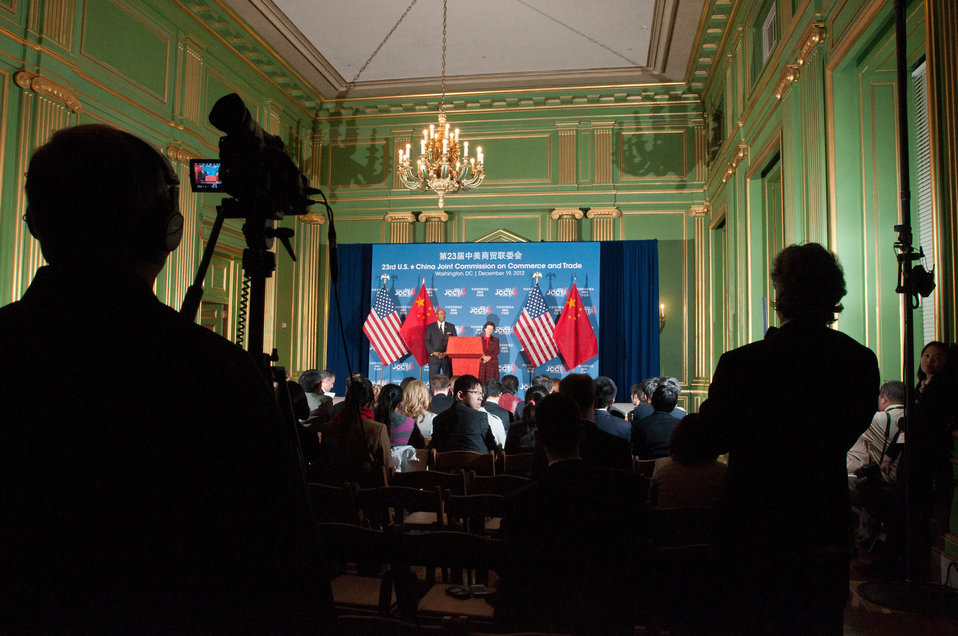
Reuters journalist Doug Palmer (right) asks a question of U.S. Trade Representative Ron Kirk and Acting U. S. Commerce Secretary Rebecca Blank, while cameras record their response, at the 23rd Session of the U.S. China Joint Commission on Commerce and Trade (JCCT) press conference, in the Andrew W. Mellon Auditorium in Washington, D.C. on Wednesday, Dec. 19, 2012. The JCCT holds high-level plenary meetings on an annual basis to review progress made by working groups that focus on a wide variety of trade issues. These working groups meet throughout the year to address topics such as intellectual property rights, agriculture, pharmaceuticals and medical devices, information technology, tourism, commercial law, environment, and statistics.